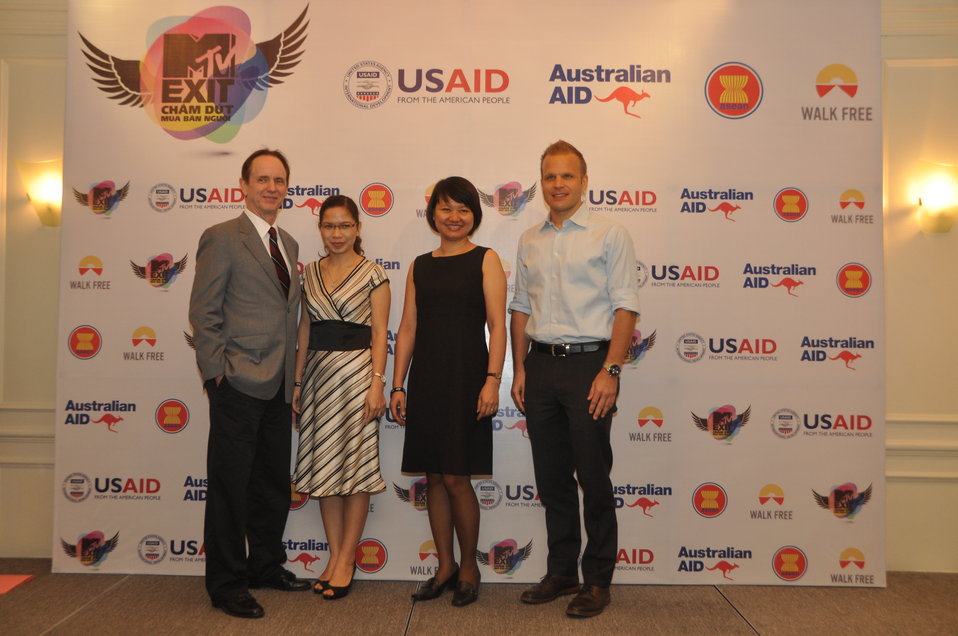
USAID joins MTVExit to launch documentary and awareness campaign against human trafficking